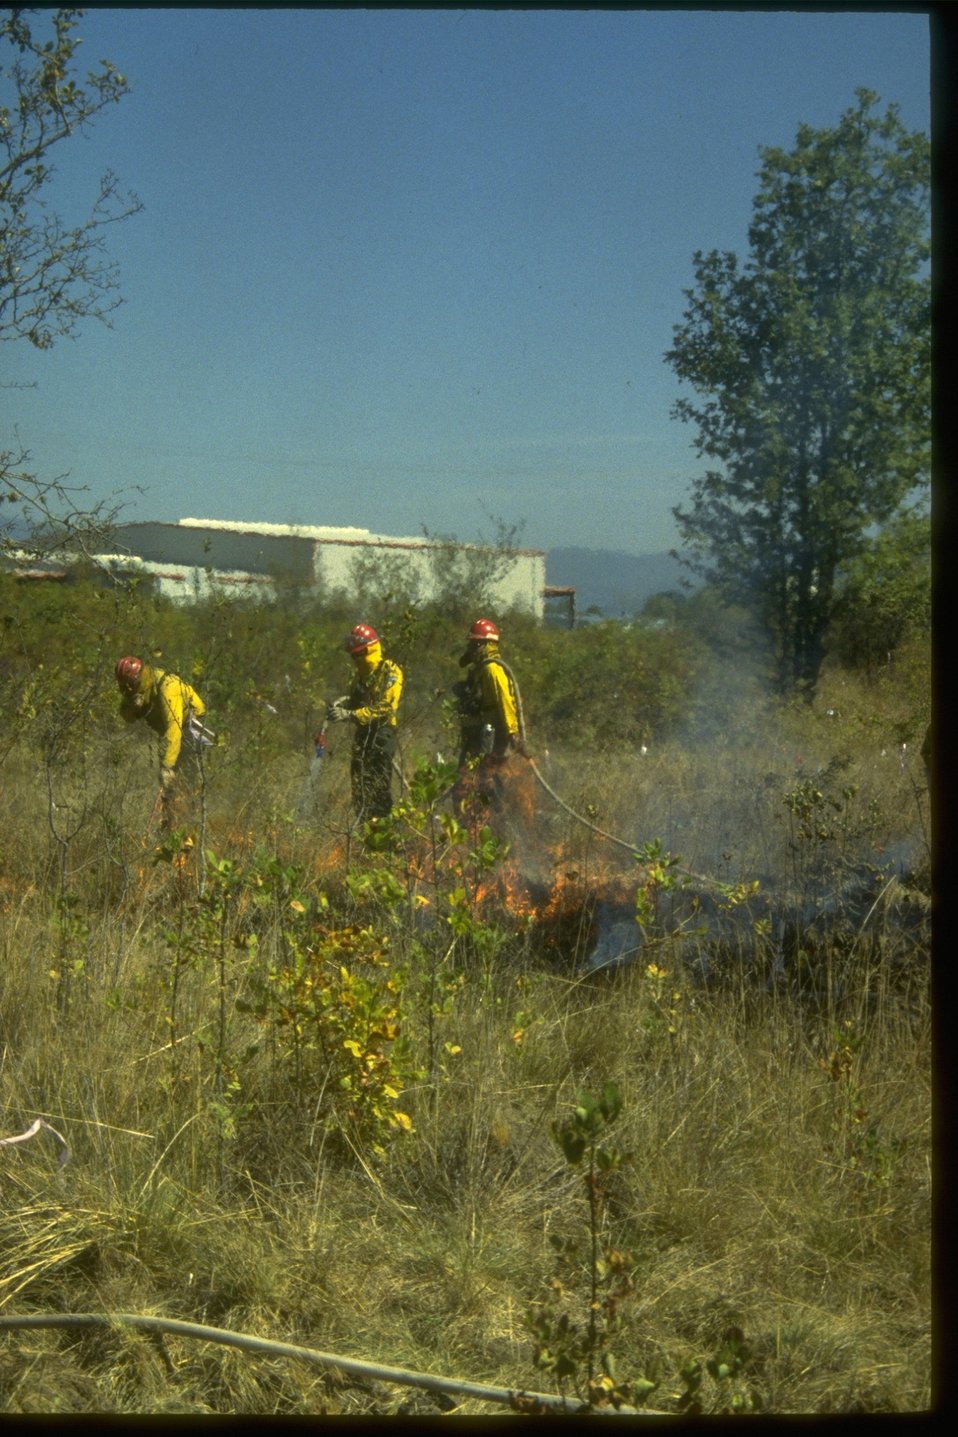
Prescribed burning at Wetlands.